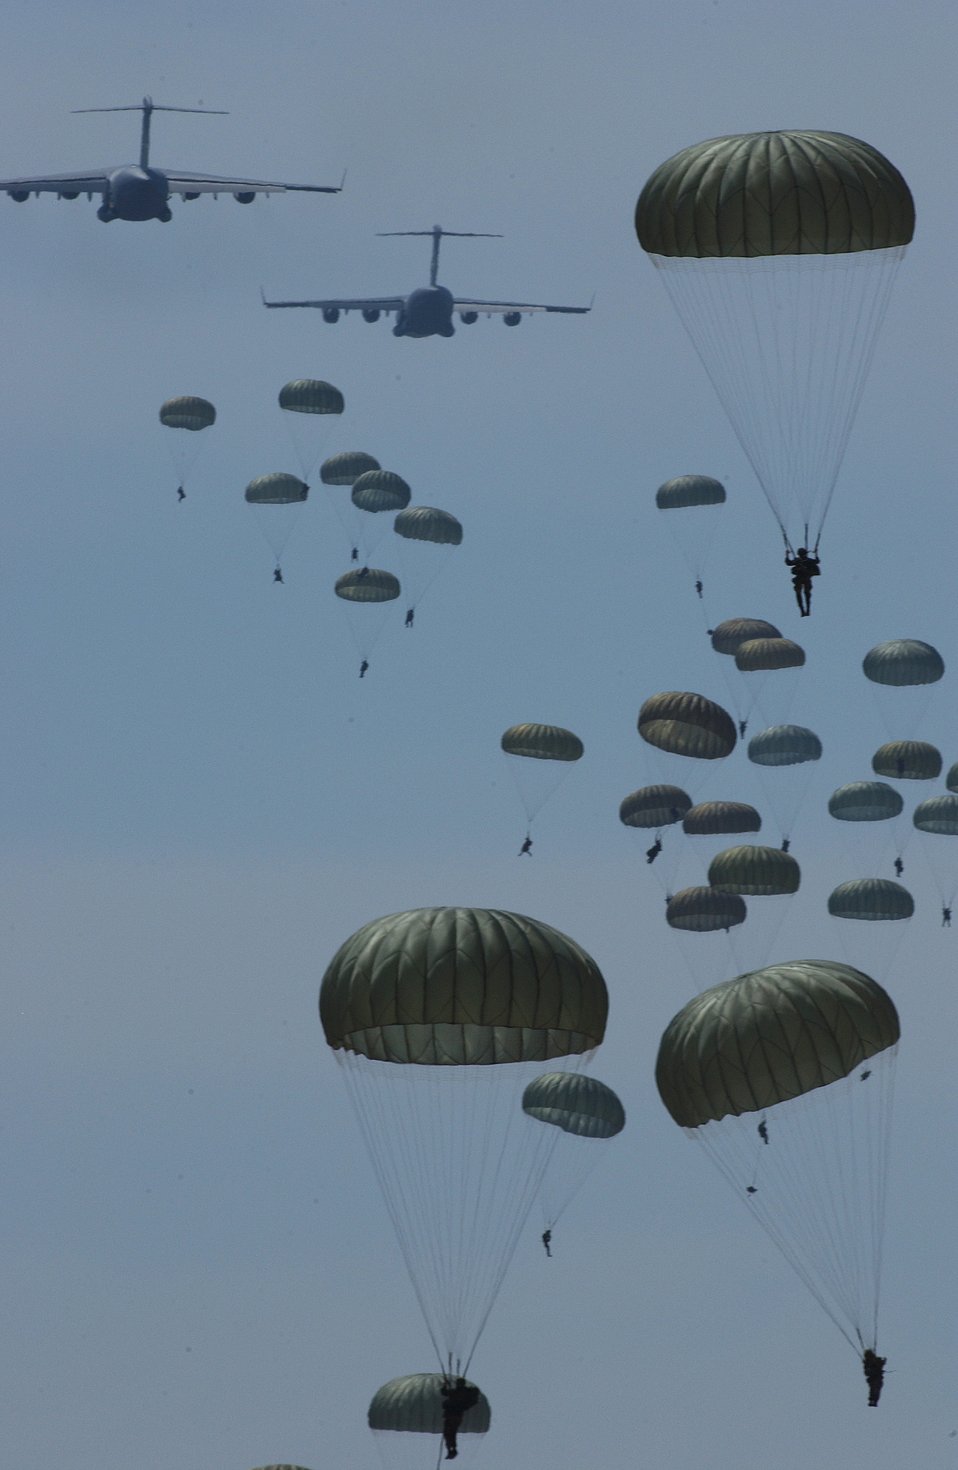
Everybody's doing it

OVER FORT BRAGG, N.C. -- U.S. Army Soldiers with the 82nd Airborne Division jump from C-17 Globemaster IIs to Landing Zone Sicily during Joint Forcible Entry Exercise here April 5. JFEX is a U.S. Army and Air Force joint airdrop exercise designed to enhance inter-service cohesiveness. JFEX gives both services an opportunity to properly execute large-scale heavy equipment and troop movement.